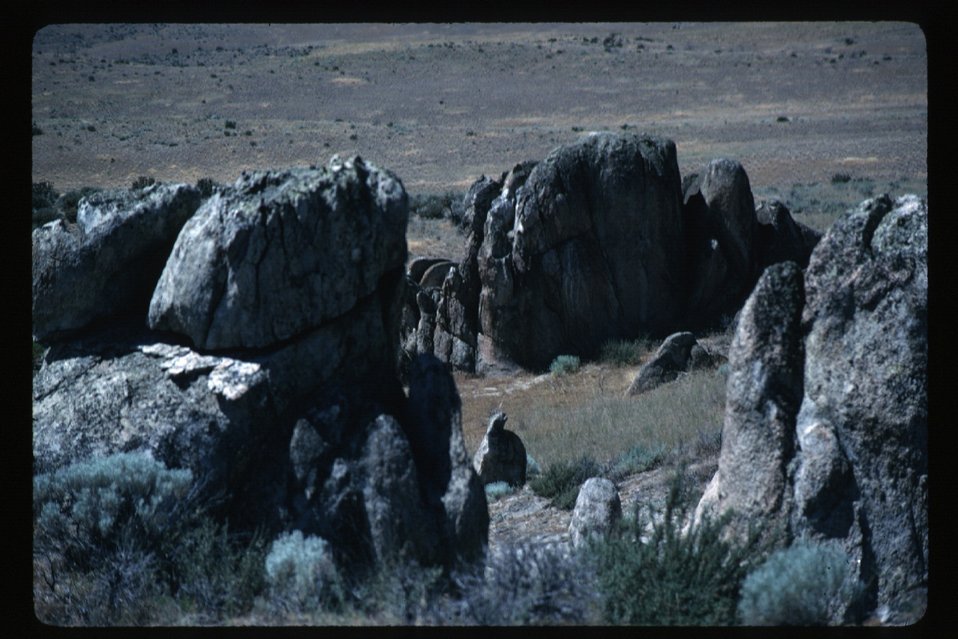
Danskin Mountains Four Rivers Field Office LSRD Lower Snake River District